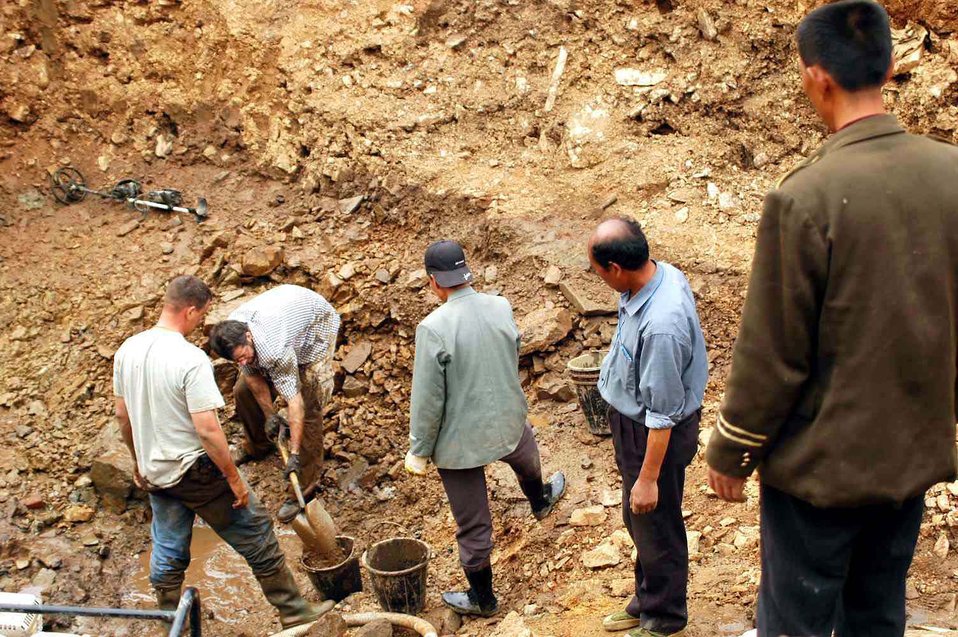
Family finally gets official word on Korean War vet's fate

DANDONG, China -- A team from the Joint POW/MIA Accounting Command at Hickam Air Force Base, Hawaii, conducts a site excavation where Capt. Troy Cope's remains were recovered.